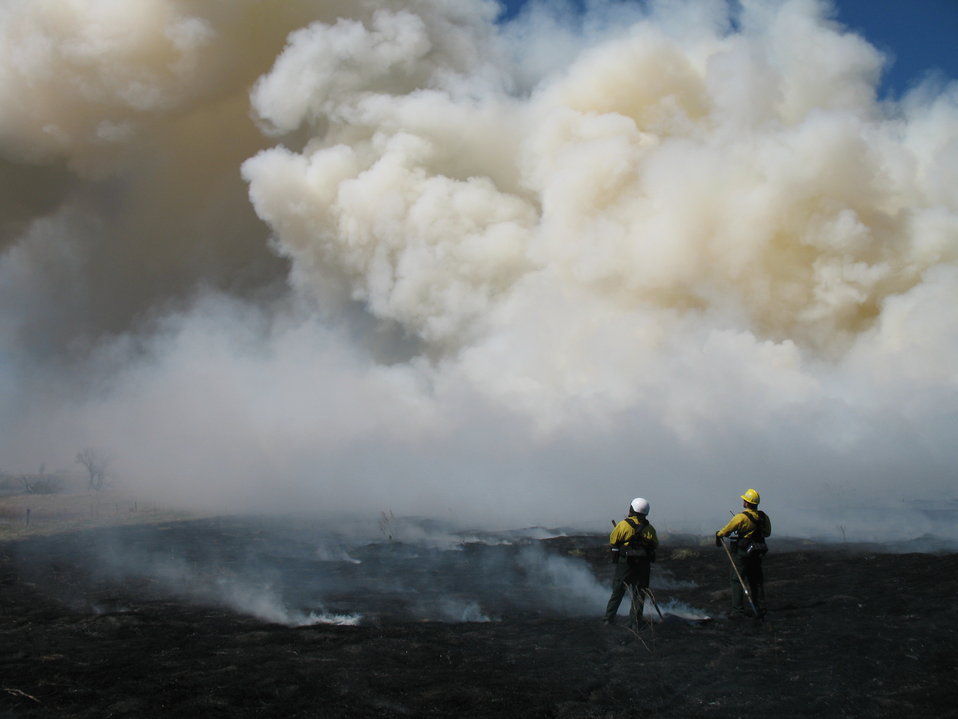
Where there's smoke...

Prescribed burning is used as a management tool to rejuvenate grasslands.